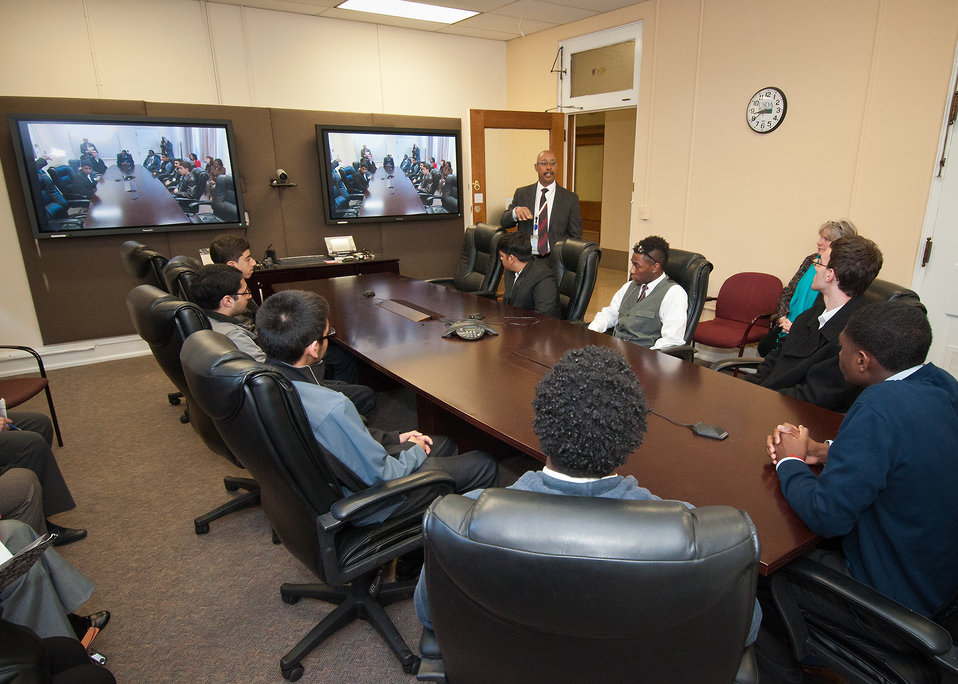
Edison Academy, Fairfax, VA student Albert Ankrah listens to U.S. Department of Agriculture (USDA) Office of Chief Information Officer (OCIO) Technology, Planning, Architecture and E-Gov Associate Chief Flip Anderson explains the depth and breadth of the information technology services during the annual USDA Information Technology (IT) Job Shadow Day held by the OCIO to introduce local high school students to careers in information technology in Washington, D.C. on Tuesday, Apr. 2, 2013.